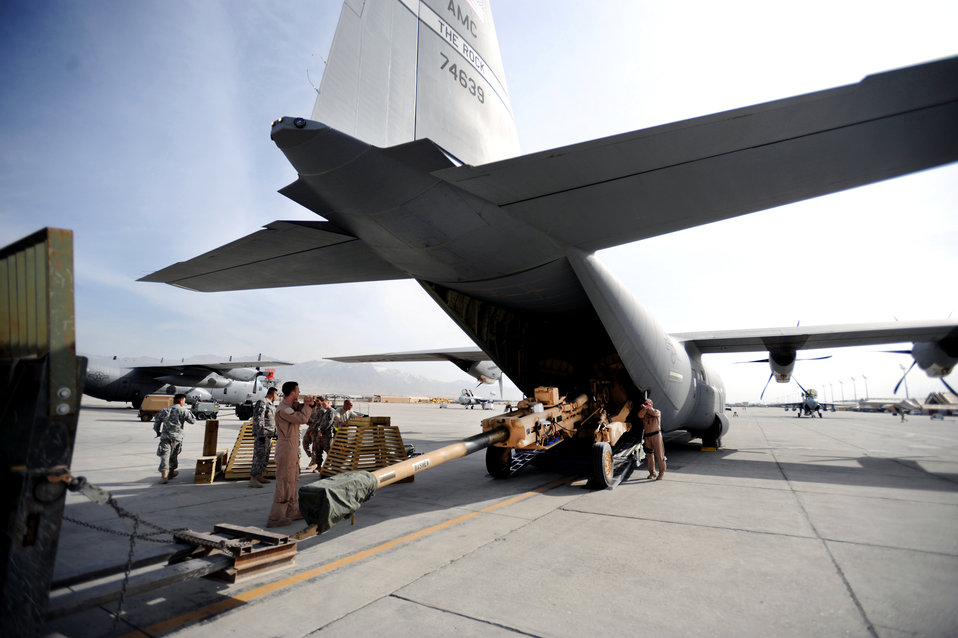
New Kandahar unit prepares for troop increase

Aircrew members load an M777 A2 Howitzer onto a C-130J Hercules March 14 at Bagram Airfield, Afghanistan. The C-130J is part of the newly assigned 772nd Expeditionary Airlift Squadron at Kandahar Airfield, Afghanistan, that has been set up to assist with the increase of U.S. troops to the region.